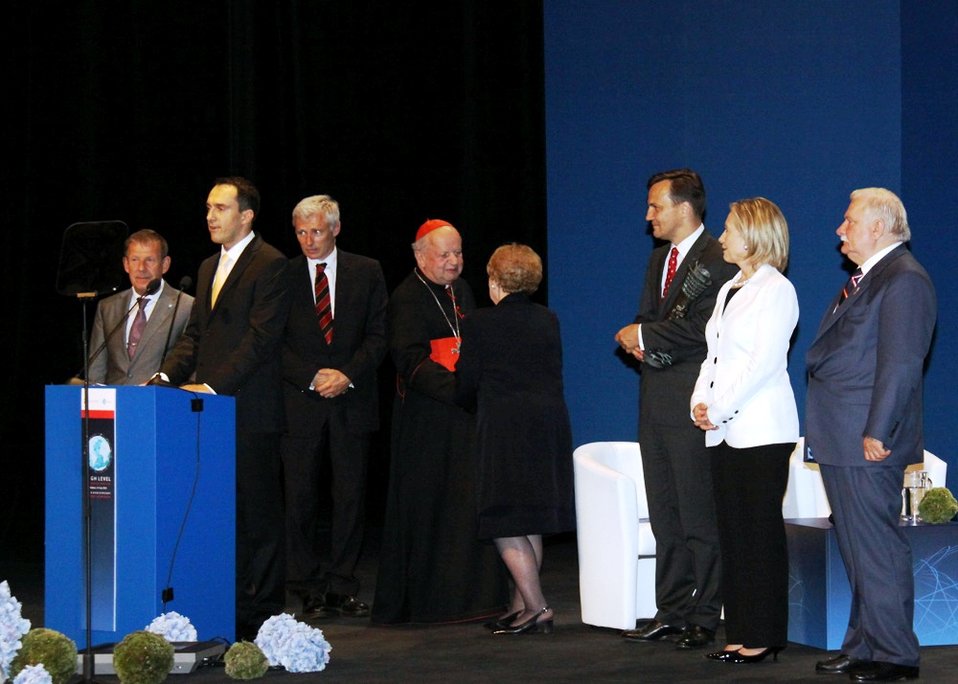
Secretary Clinton Watches the Winner of the Geremek Award Walk to the Podium

U.S. Secretary of State Hillary Rodham Clinton watches the winner of the Geremek Award walk to the podium at the Community of Democracies conference at the Slowacki Theater in Krakow, Poland, on July 3, 2010.